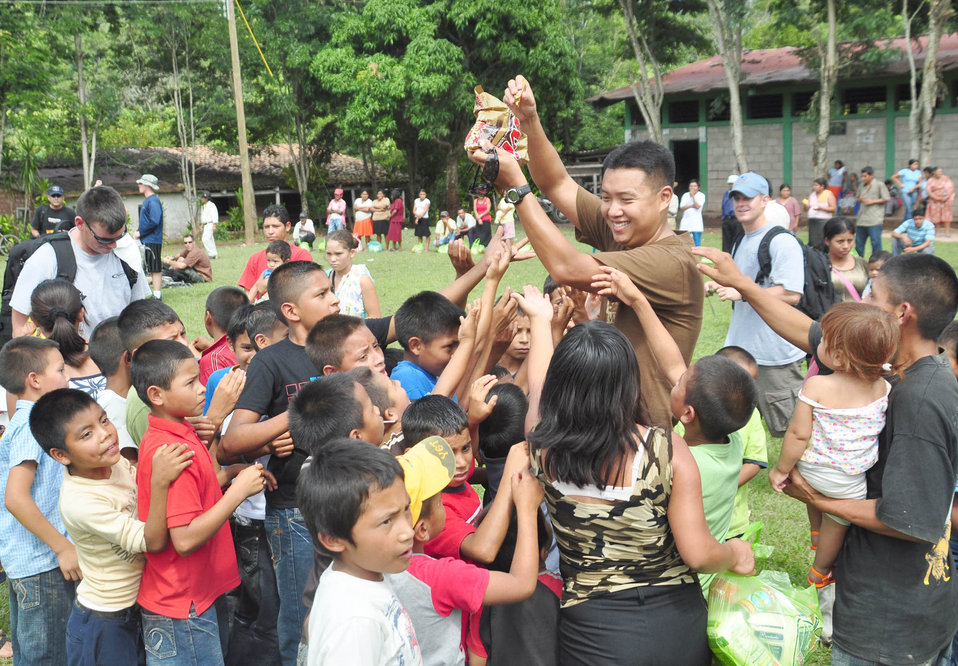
No tricks, just treats

Staff Sgt. Song Moon hands out candy Oct. 31, 2009, to a group of eager children at El Ciruelo, a mountain village near Comayagua, Honduras, during a monthly chapel hike. Eighty-one volunteers from Joint Task Force-Bravo hiked more than five miles up and down a mountain road to deliver food to the remote village. The group carried a total of 122 bags of food, equaling 2,684 pounds.